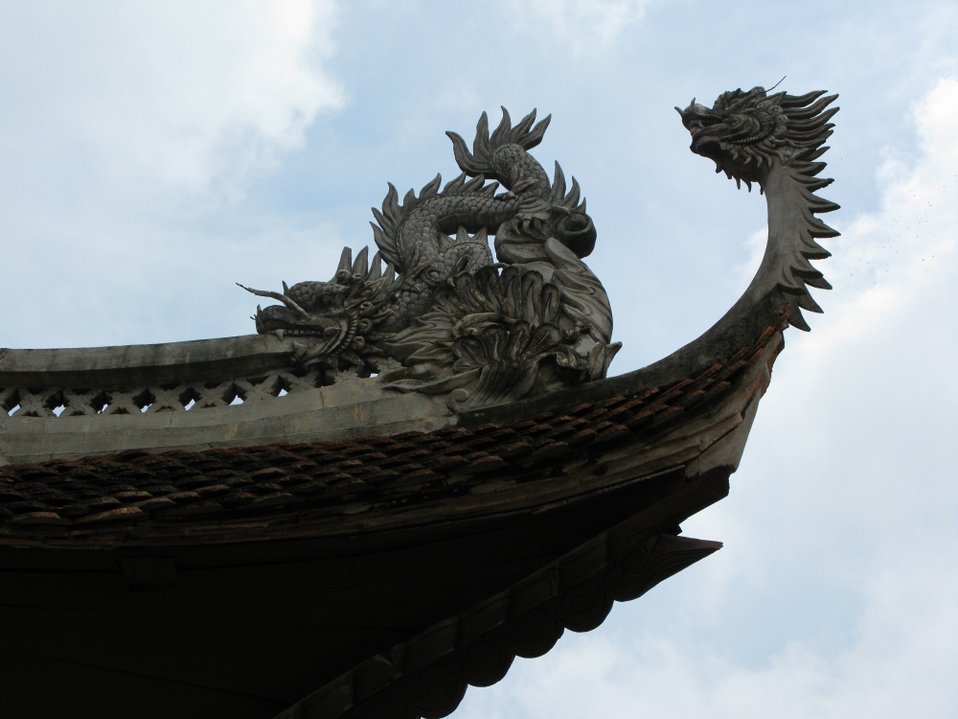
Dận Pagoda, Từ Sơn, Bắc Ninh, Việt Nam